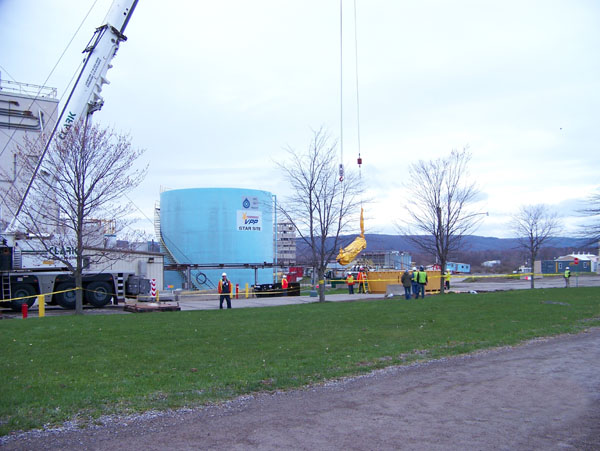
West Valley Off Gas Cell cleanup

A vessel is removed from the Off Gas Cell at the West Valley Demonstration Project.